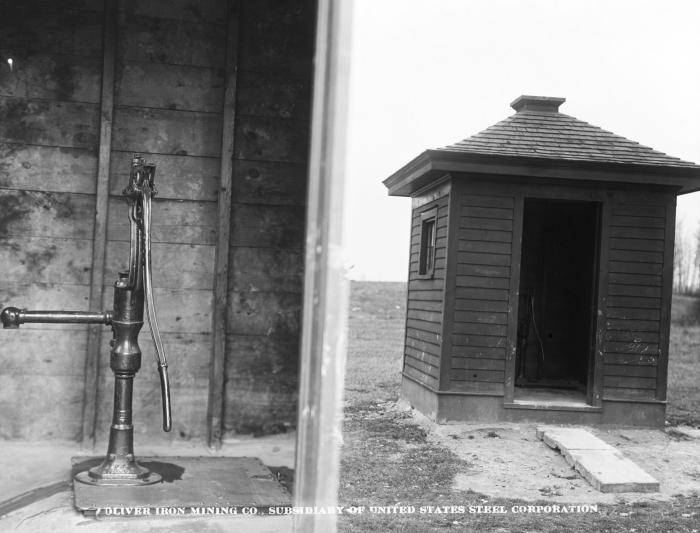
This historic 1915 photograph depicted a water pump and a pump house at an Oliver Mining Company industrial facility known as the Trout Lake Concentrator. Back in 1910, it was a new, progressive, ore washing plant built on the east side of Trout Lake near the city of Coleraine, Minnesota. The photograph was described as offering an example of a properly constructed dug well.